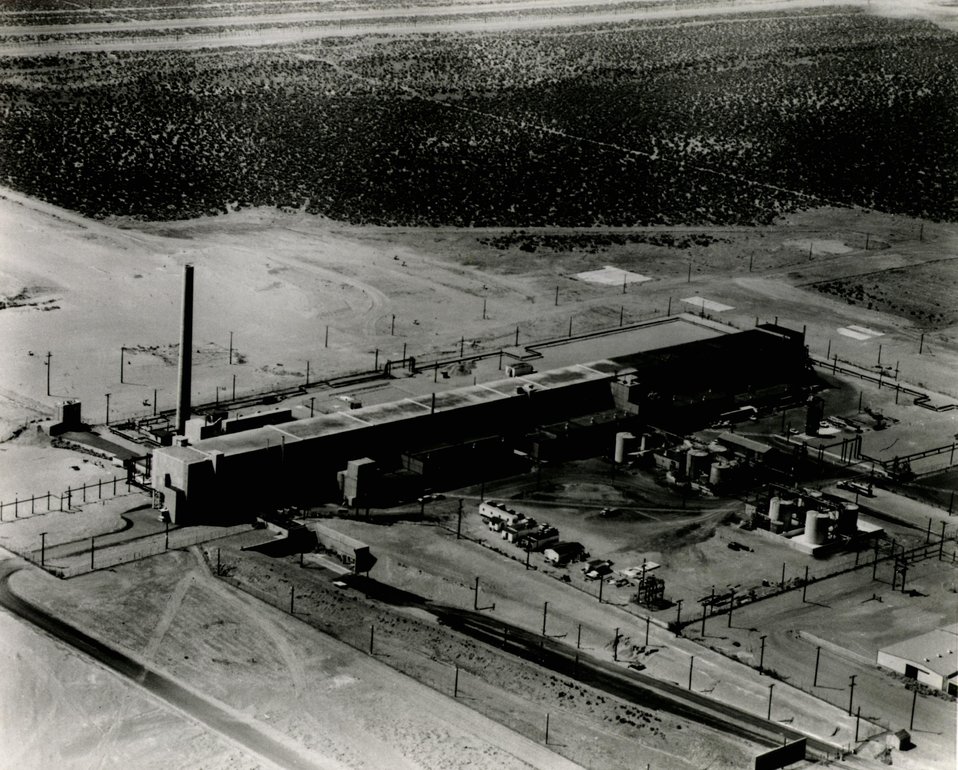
The Purex separations facility at the Hanford Works contains equipment for processing irradiated fuel elements. The facilities include metal dissolution, separation and decontamination of uranium and plutonium, acid recovery, chemical laboratory, offices and other areas. Circa 1968.